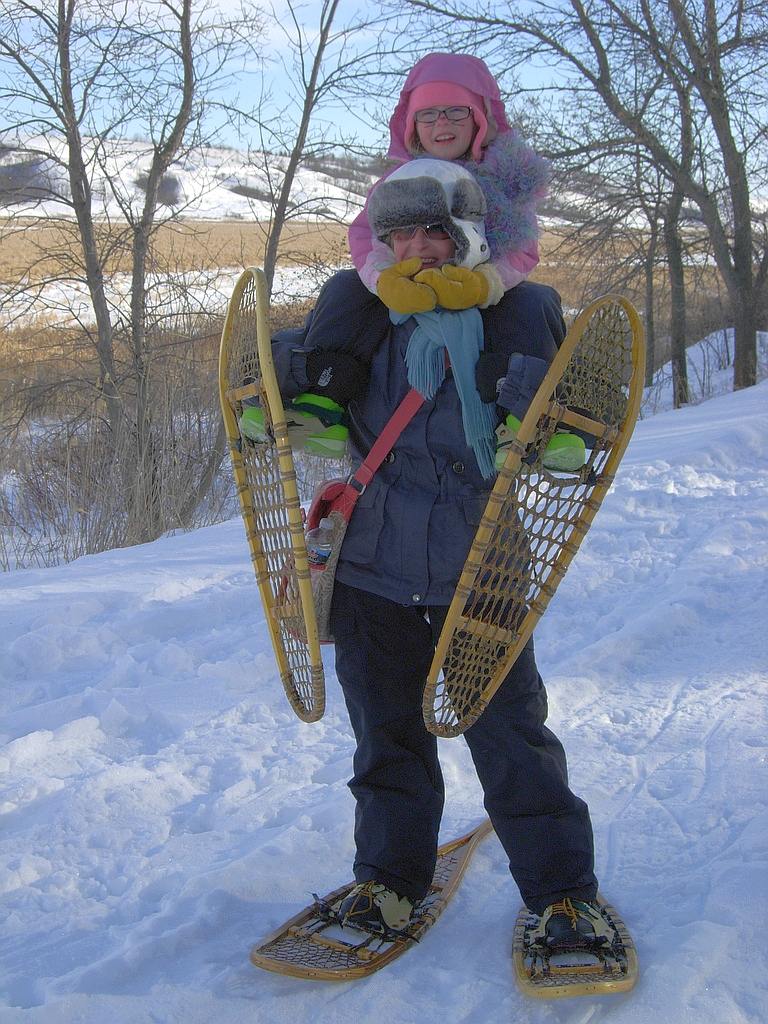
Piggyback

Des Lacs Refuge, ND